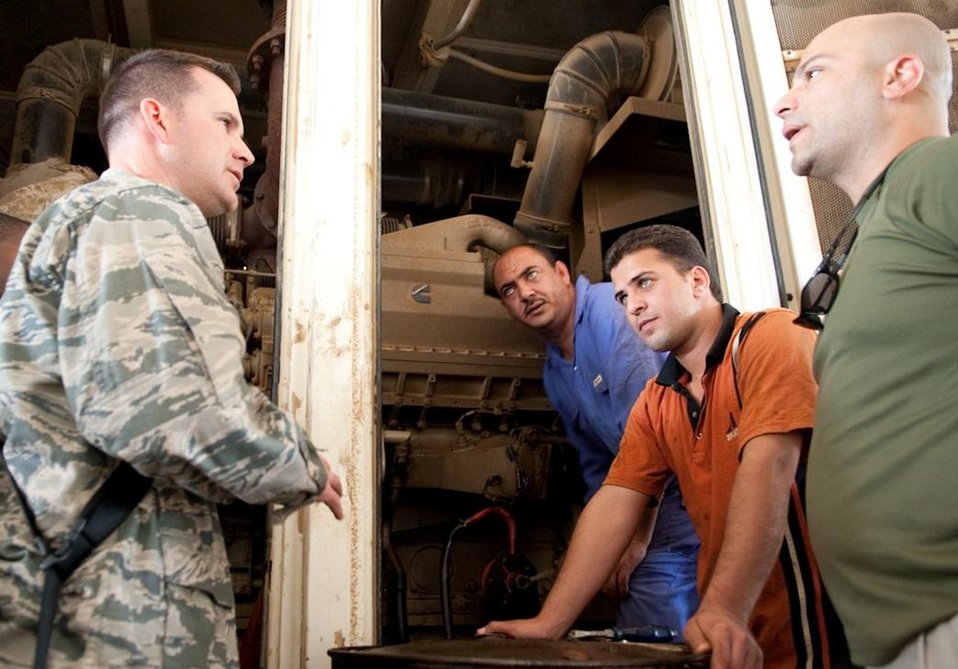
Ali Airmen and Iraqi soldiers team up to keep electricity flowing

Tech. Sgt. Vincent Dilore explains some of the finer points of preventative maintenance to two Iraqi Army power production technicians April 20, 2010, during a visit to Camp Ur, Iraq, as part of an Iraqi Training and Advisory Mission. Sergeant Dilore is assigned to the 407th Air Expeditionary Group Civil Engineer Squadron power production flight.